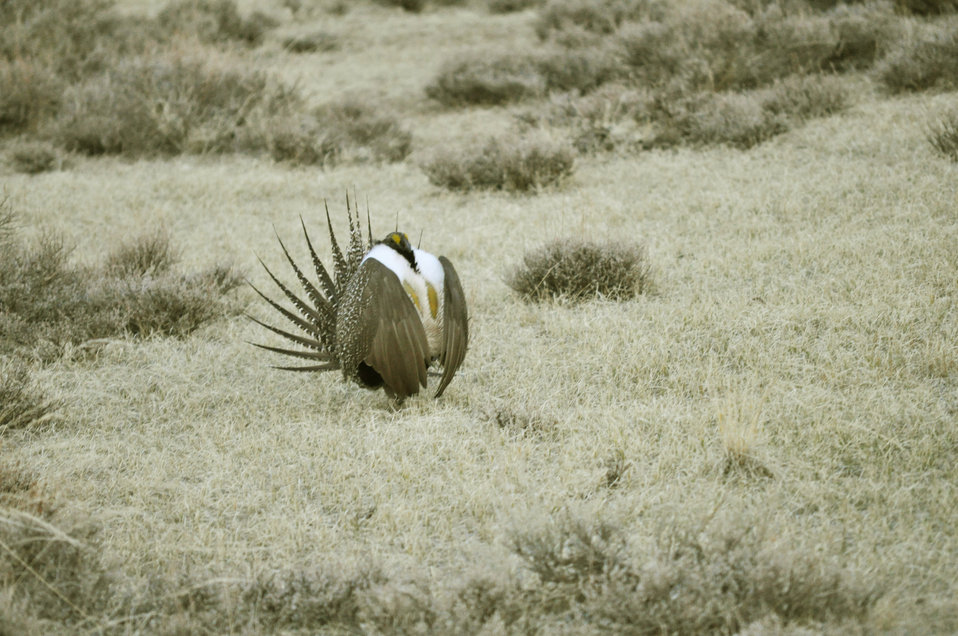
Male greater sage-grouse struts at lek (dancing or mating grounds) to attract females near Bodie, California.